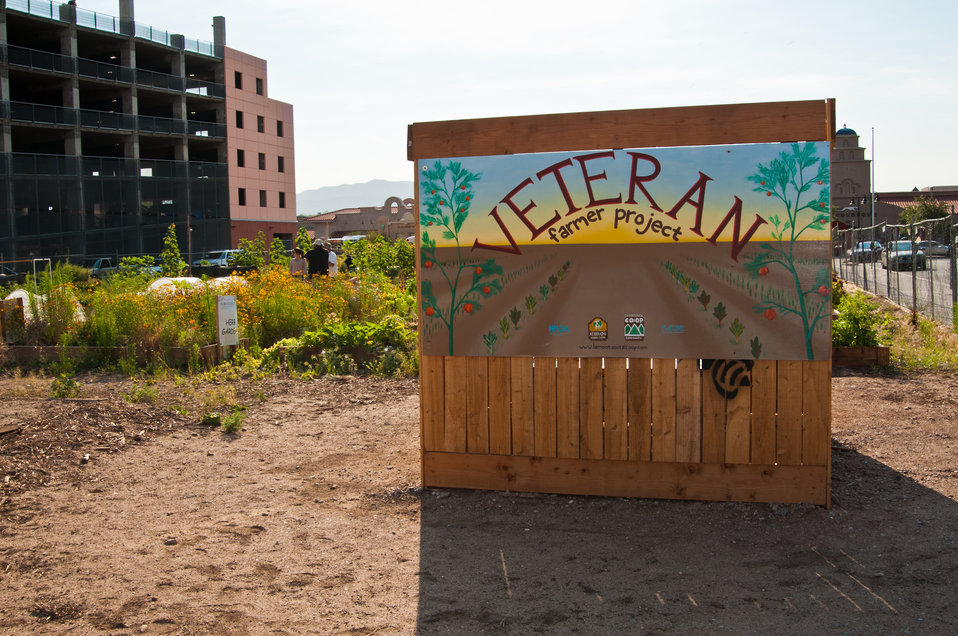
The La Montanita Co-op Veteran Farm Project (VFP) funded through the U.S. Department of Agriculture's (USDA) Agricultural Marketing Service (AMS) Specialty Crop Grant program provides veterans workshops on sustainable farming practices, hands-on gardening and farming experience. This collaboration between La Montanita Co-op, Downtown Action Team, the Veteran’s Administration, the New Mexico Department of Agriculture and Holistic Management International provides the initial training for veterans to start or work at sustainable agriculture businesses. VFP grows produce at their Alvarado Urban Farm in Albuquerque, NM year round. The VFP gardens will supply a stand at the Veteran Affairs (VA) Farmers’ Market once a week over the summer, feed project participants and fill Community Supported Agriculture (CSA) boxes for low-income families in Albuquerque, New Mexico.